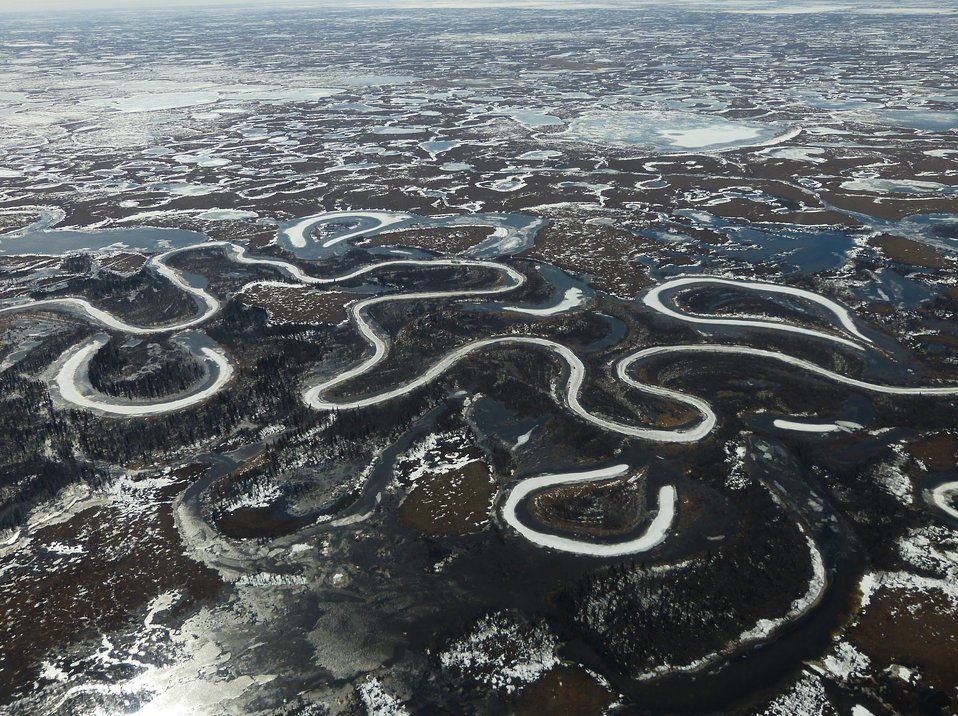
YDNWR 5-13-2013 KSowl (3)

River oxbows, Yukon Delta National Wildlife Refuge, May 13, 2013

Photo credit: Kristine Sowl,
USFWS, YDNWR